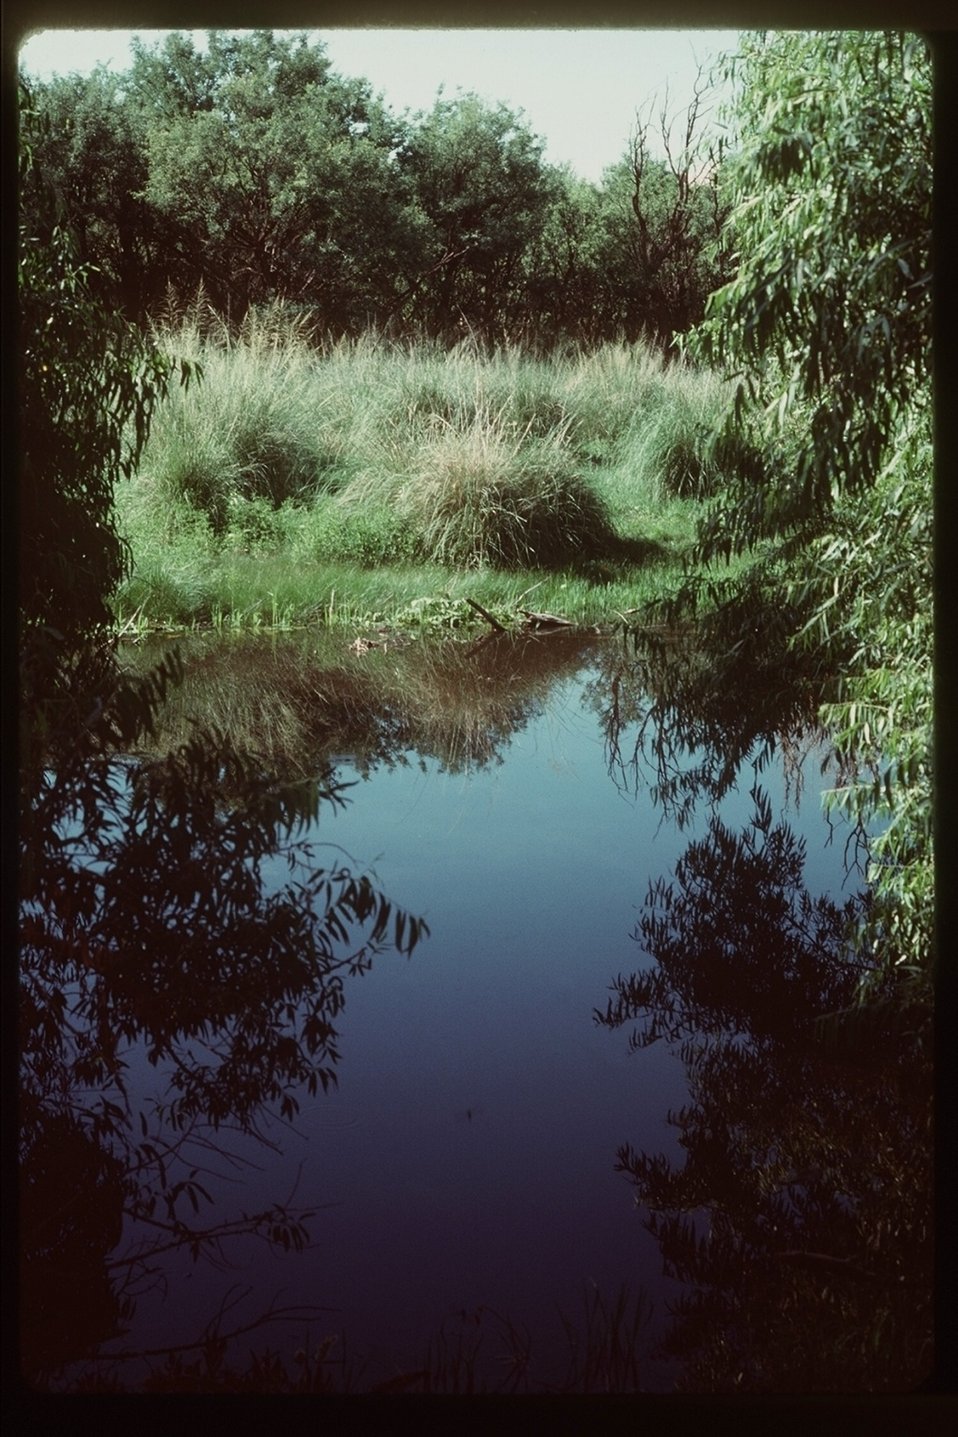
The Empire and Cienega ranches, along with portions of the adjacent Rose Tree Ranch, were acquired by the Bureau of Land Management (BLM) in June 1988. BLM's acquisition included rolling grasslands and woodlands.